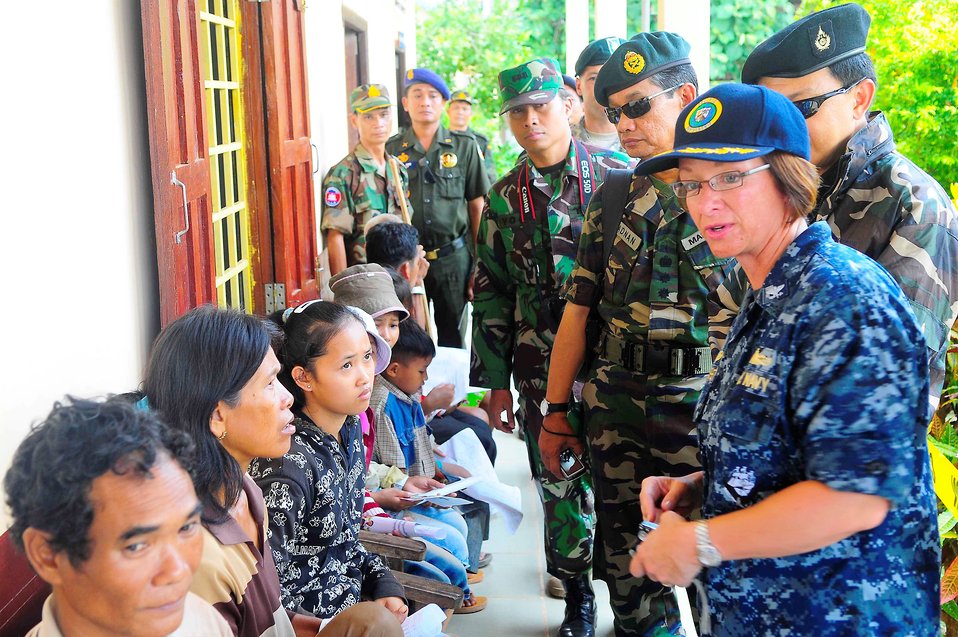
PP2010 Commander, Capt. Franchetti, Speaks With Medical Patients

The commander of Pacific Partnership 2010, Capt. Lisa M. Franchetti, speaks with medical patients at a medical civic action program in Rattanakiri, Cambodia, in support of Pacific Partnership 2010 on June 18, 2010.